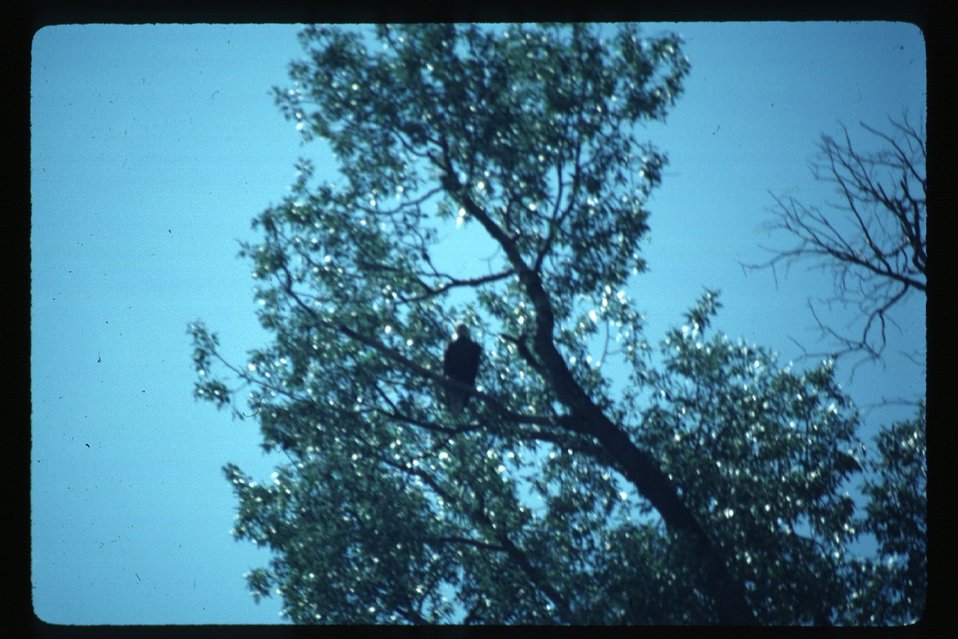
Bald Eagle Wildlife USRD Upper Snake River District